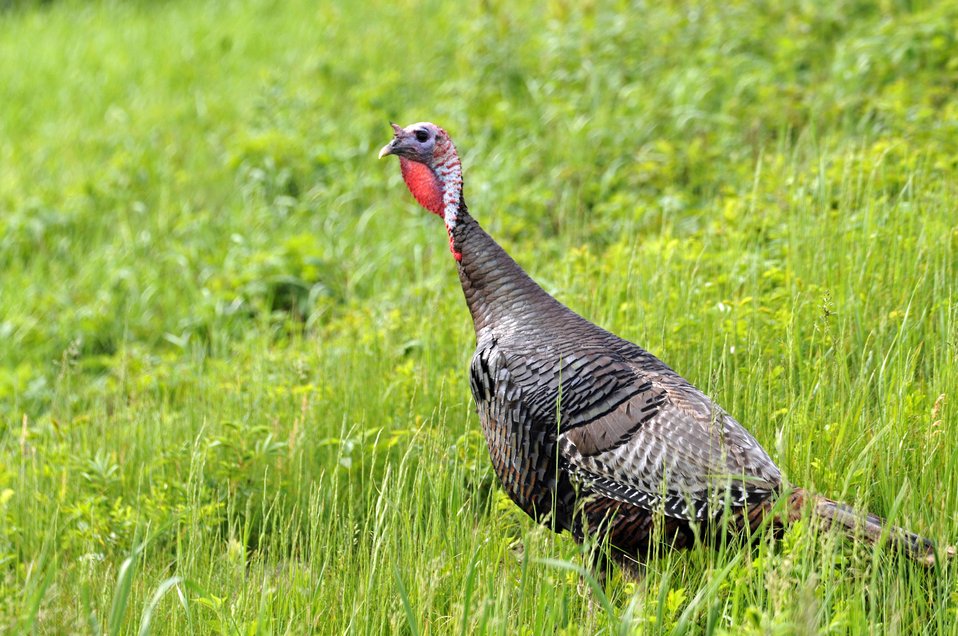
Turkey

Great Bay National Wildlife Refuge, MA.